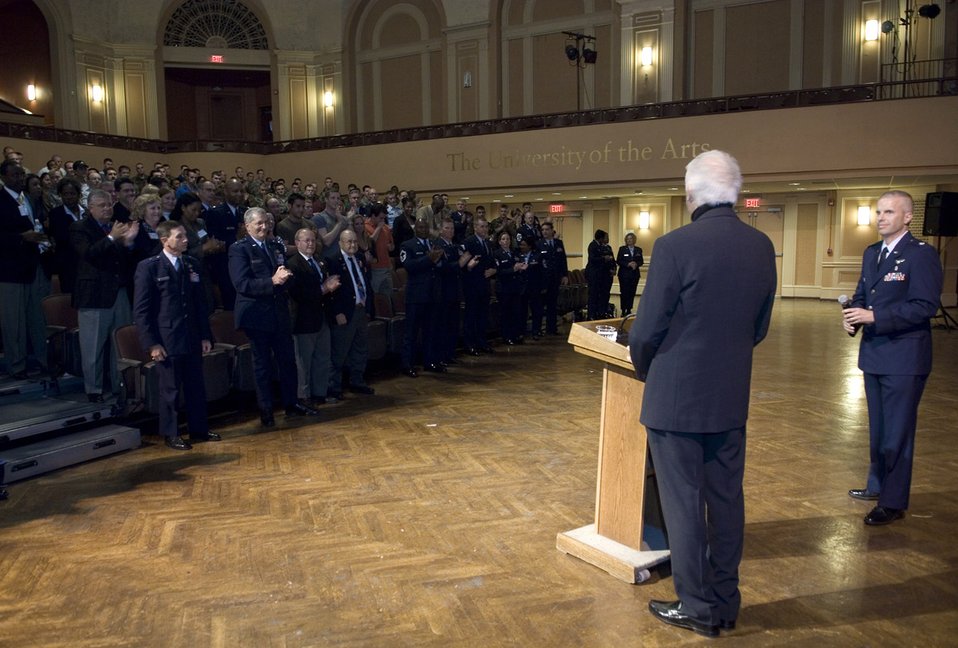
Presentation of 'Fighting for Life' documentary

Director Terry Sanders, a two-time Academy Award winner, receives a standing ovation after the premiere showing of his film 'Fighting for Life' during Air Force Week - Philadelphia May 28. The film is a feature documentary telling the stories of doctors and nurses fighting on the front lines of battle to save lives. The Air Force Week program is part of a proactive initiative to increase communication with the public. Air Force Week includes community visits and talks by Air Force officials, flight demonstration team performances and displays highlighting the Air Force men and women serving on the front lines.